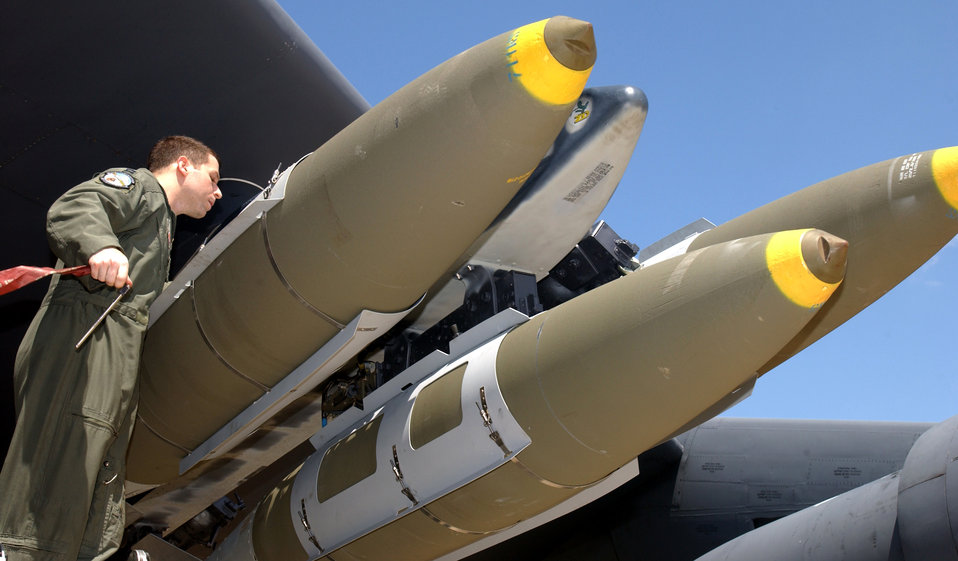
Mission ready

BARKSDALE AIR FORCE BASE, La. -- Capt. Peter Terrebonne inspects 2,000-pound Joint Direct Attack Munitions here before a training mission May 20. Captain Terrebonne is a B-52 Stratofortress radar navigator assigned to the 340th Weapons School.